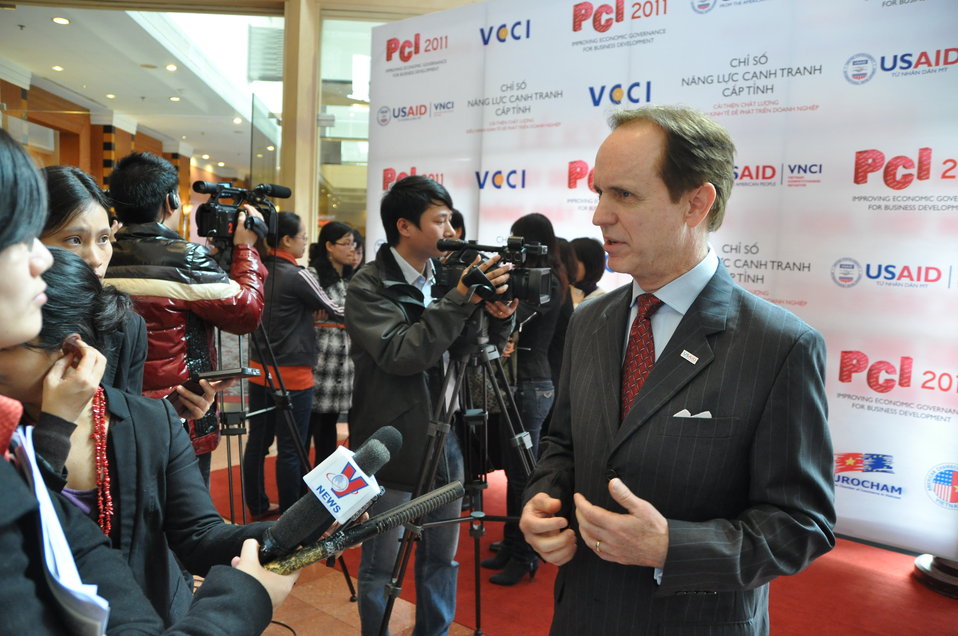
USAID Mission Director Francis Donovan at the Provincial Competitiveness Index 2011 Launch: